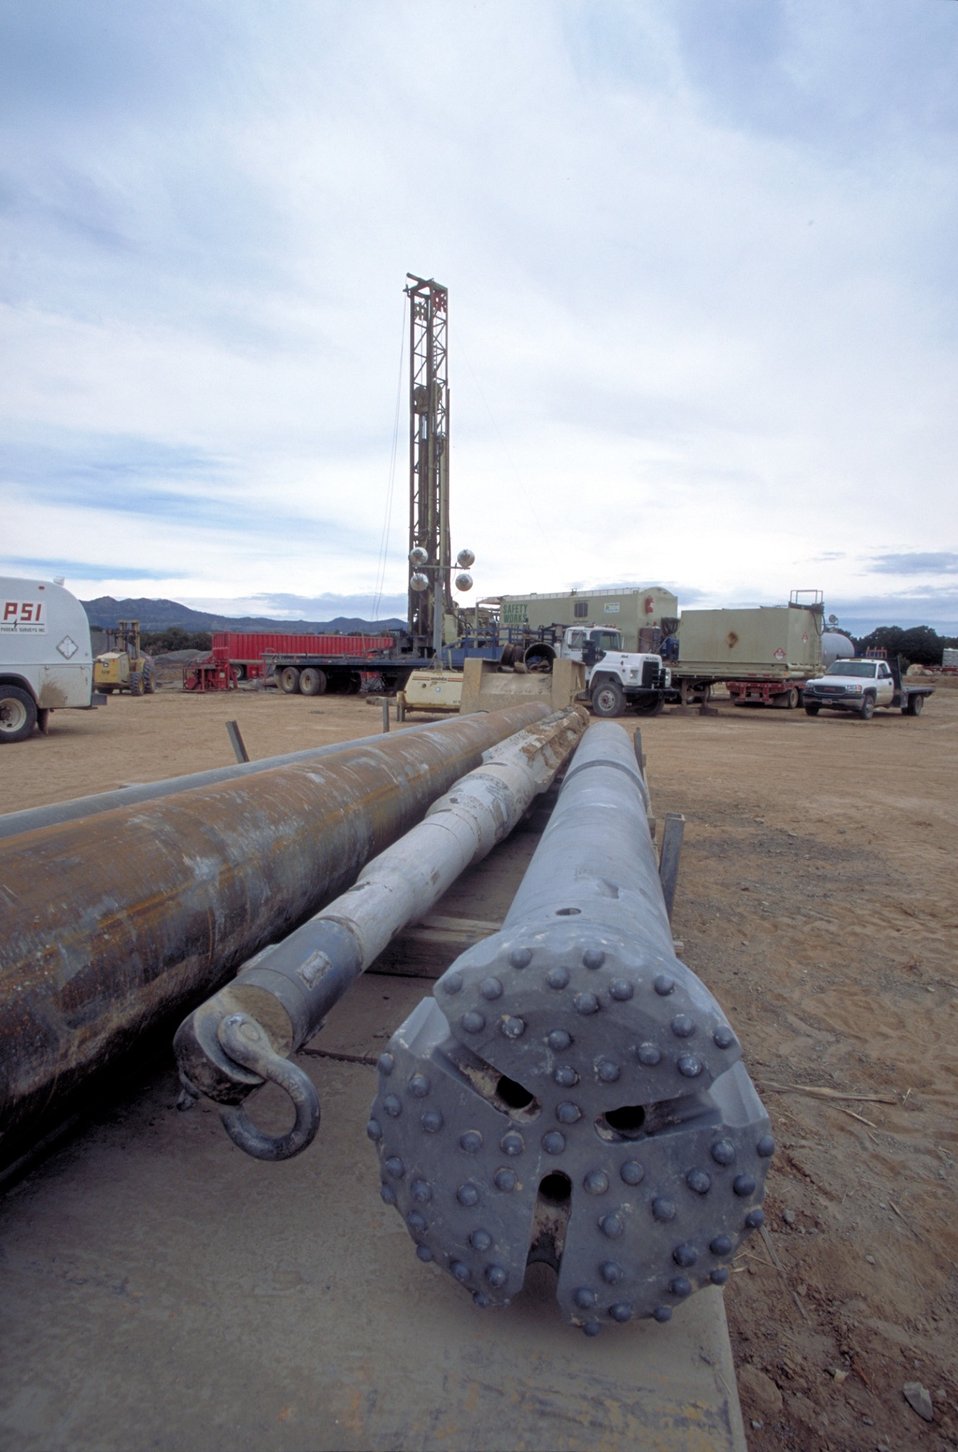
Drilling for coal bed methane near Price, Utah.